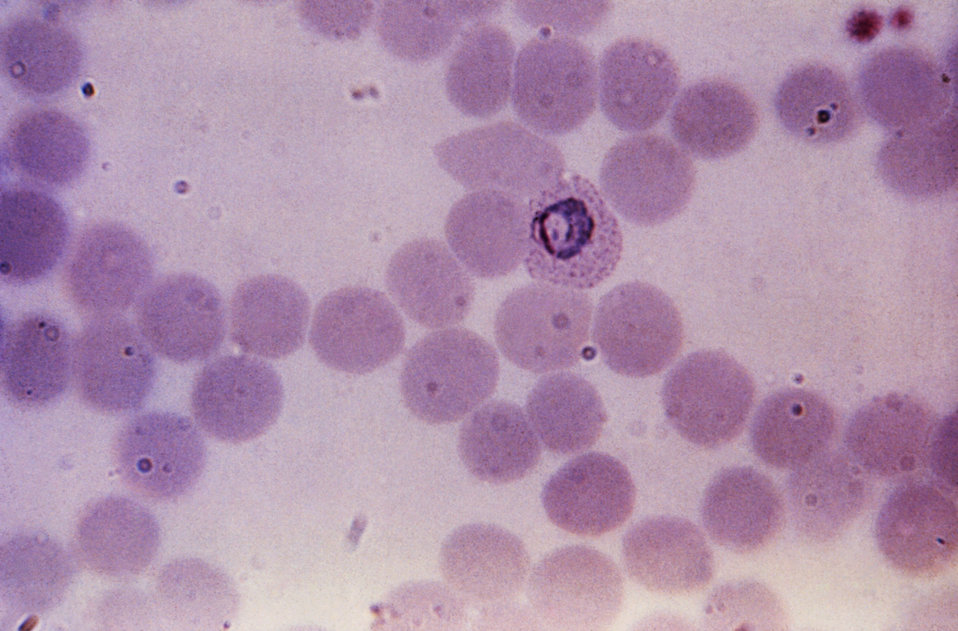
This thin film Giemsa stained micrograph depicts a compact Plasmodium vivax trophozoite.